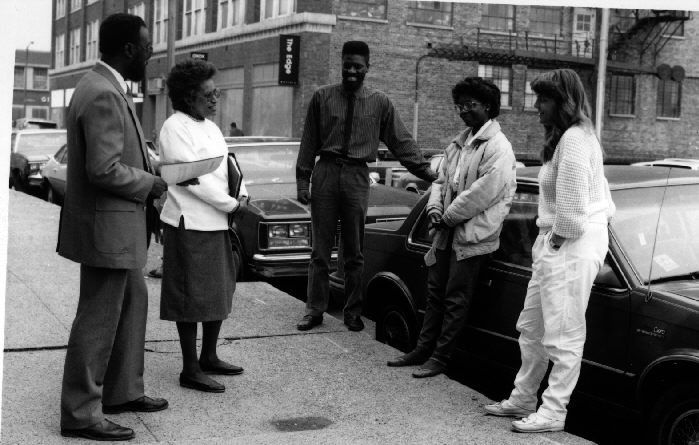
Street intercept interview/counseling session.